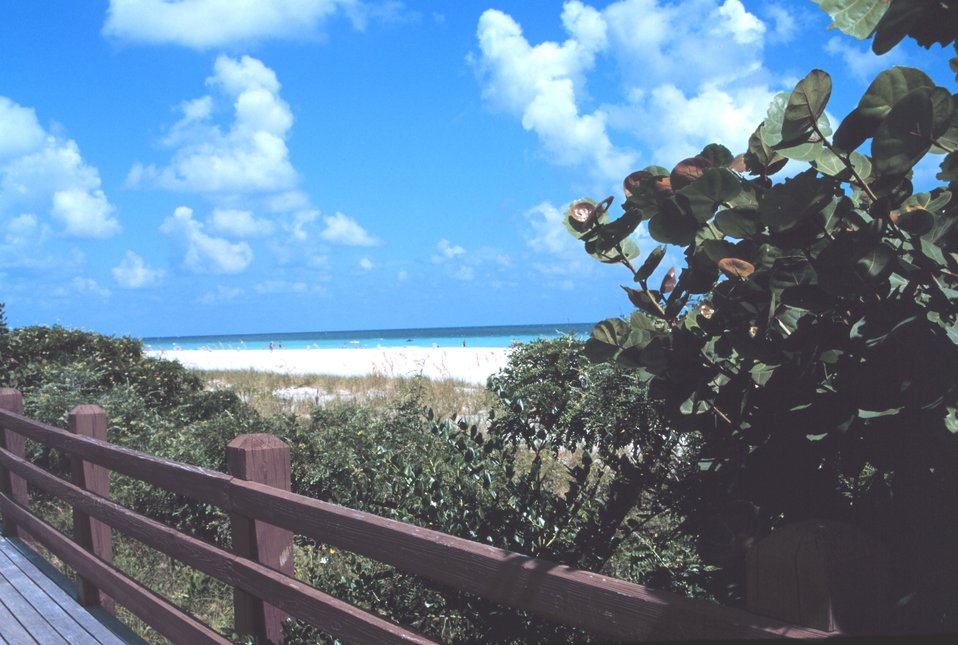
A view of the beach along the Atlantic Ocean